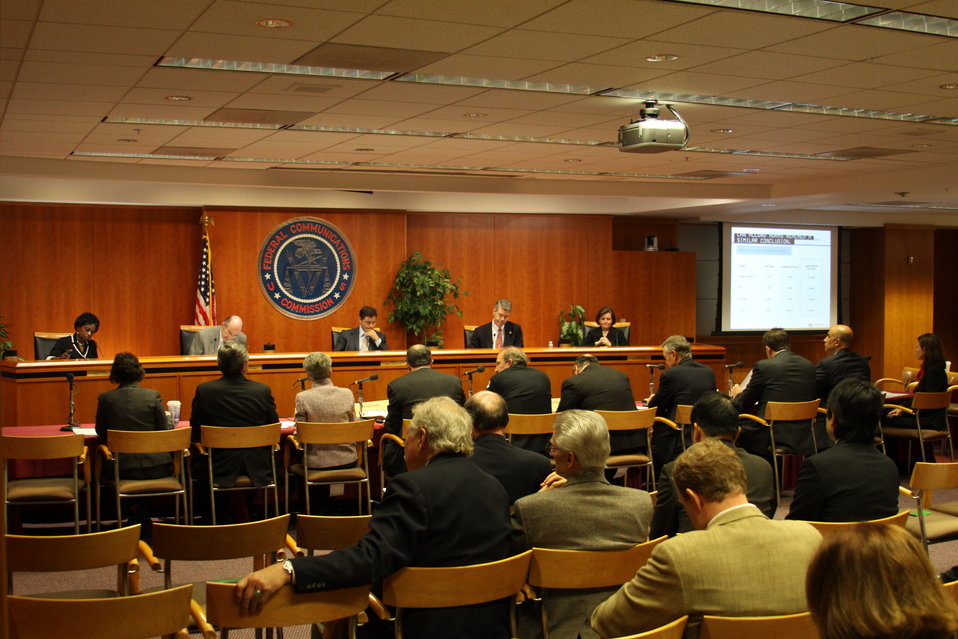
November Open Meeting